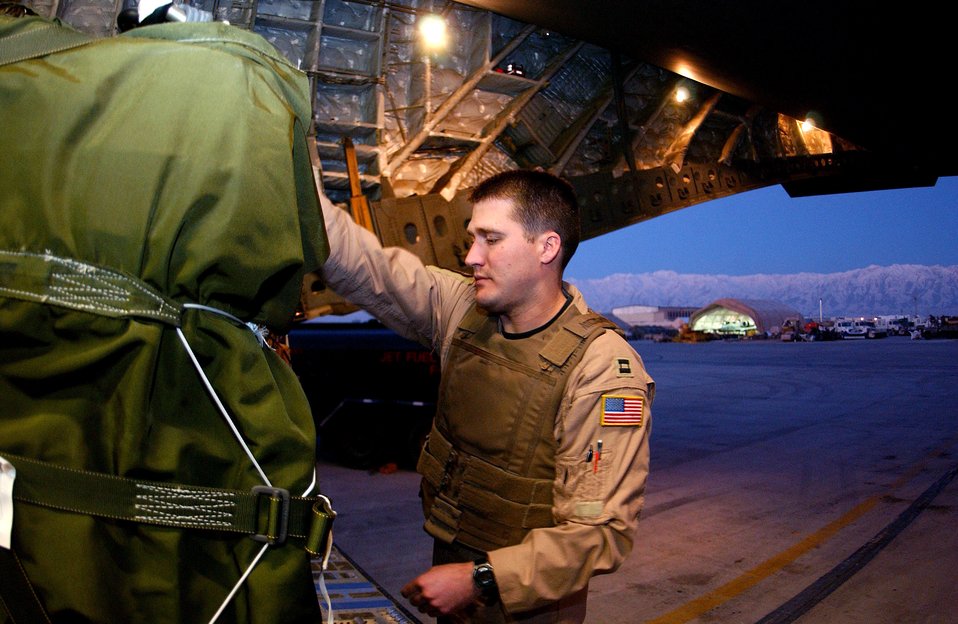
Dropping freedom

Capt. Matthew Inscoe checks pallets that his crew will be airdropping to servicemembers at remote camps Jan. 2 in Afghanistan. The aircraft and crew are from a desert air base in Southwest Asia. Captain Inscoe the aircraft commander of a C-17 Globemaster III with the 816th Expeditionary Airlift Squadron.